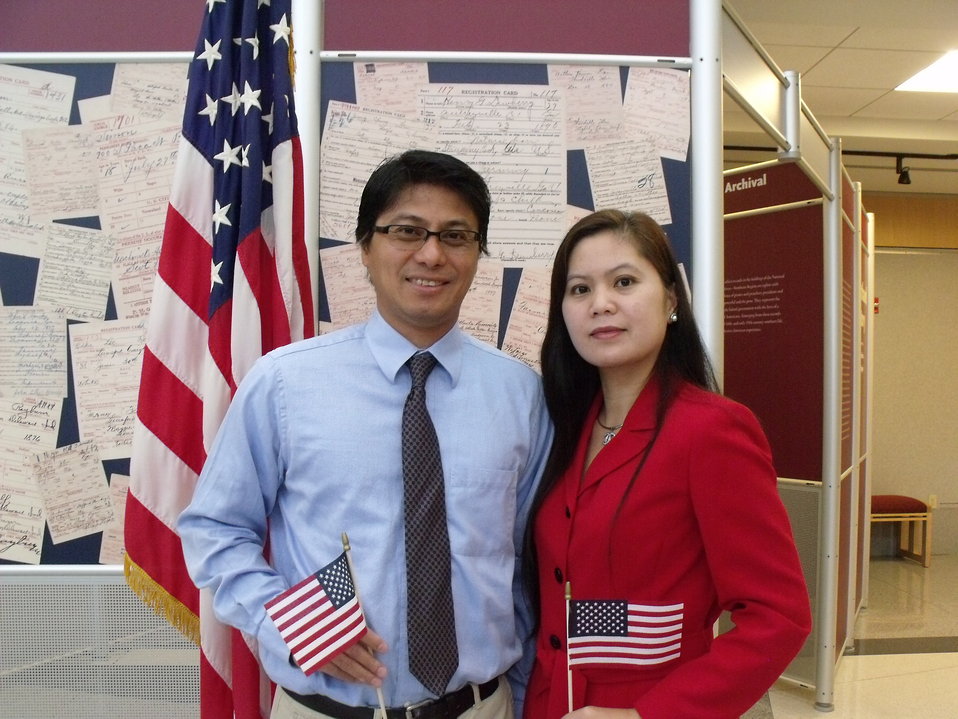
New Citizens